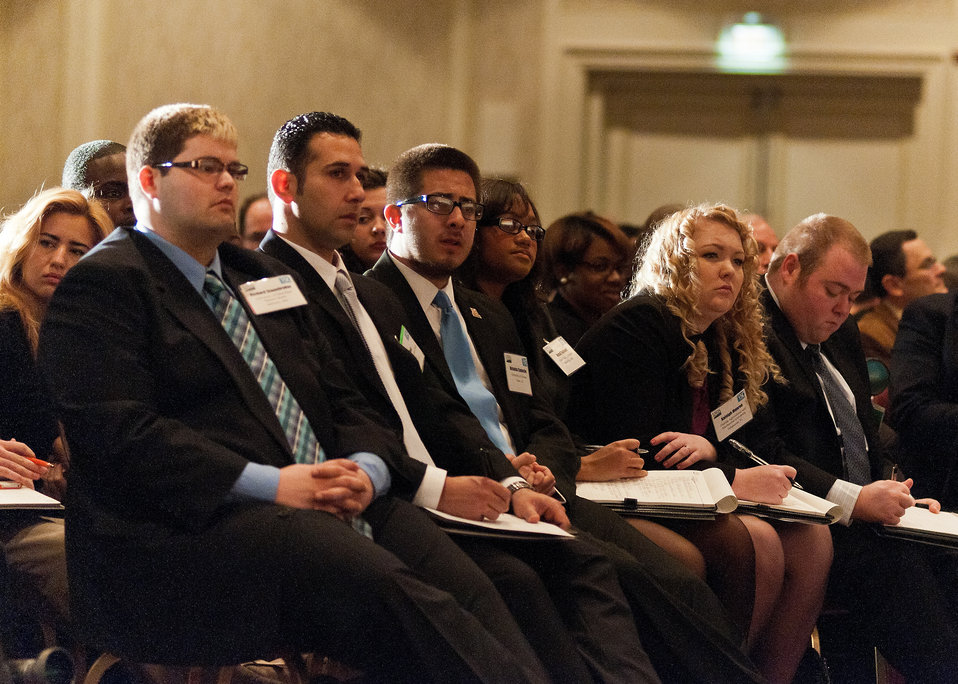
At the 2012 Agricultural Outlook Forum, “Moving Agriculture Forward” in Arlington, VA, held on Thursday, February 23, 2012, 7 former Secretaries of Agriculture sat on the plenary panel “Visions of the Future” hosted by current Agriculture Secretary Tom Vilsack. A diverse group of interested reporters, stakeholders, and farmers attended the plenary session with the former Secretaries.